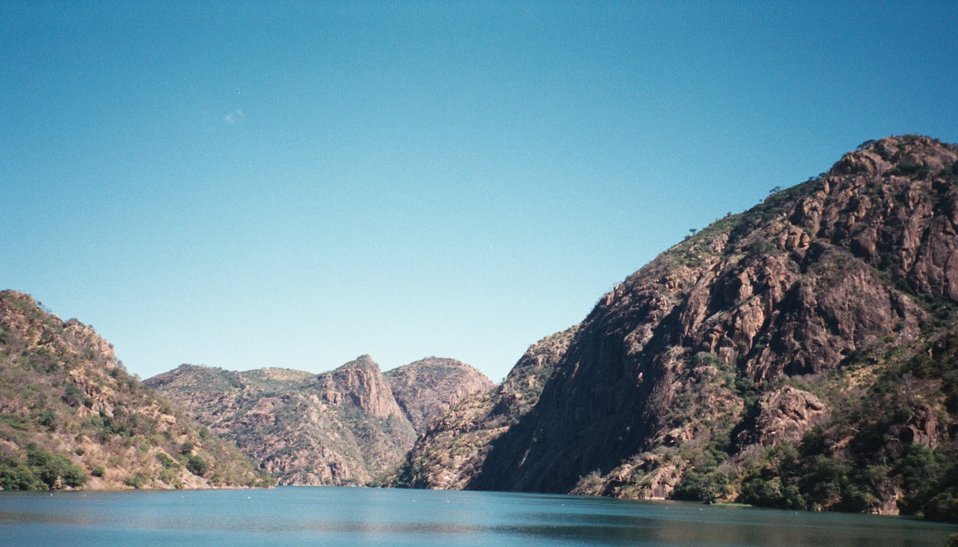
View of the Cahora Bassa Dam